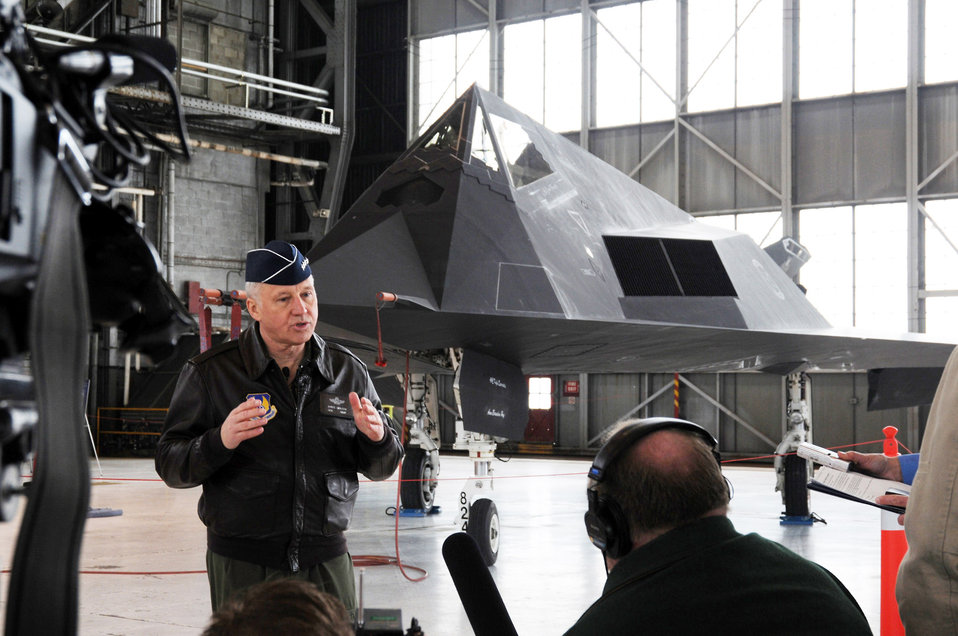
F-117 retires

Air Force Materiel Command Commander Gen. Bruce Carlson conducts interviews with the media during the F-117 Nighthawk Farewell Ceremony at Wright-Patterson Air Force Base, Ohio, March 11. The ceremony concluded with a single ship flyover.